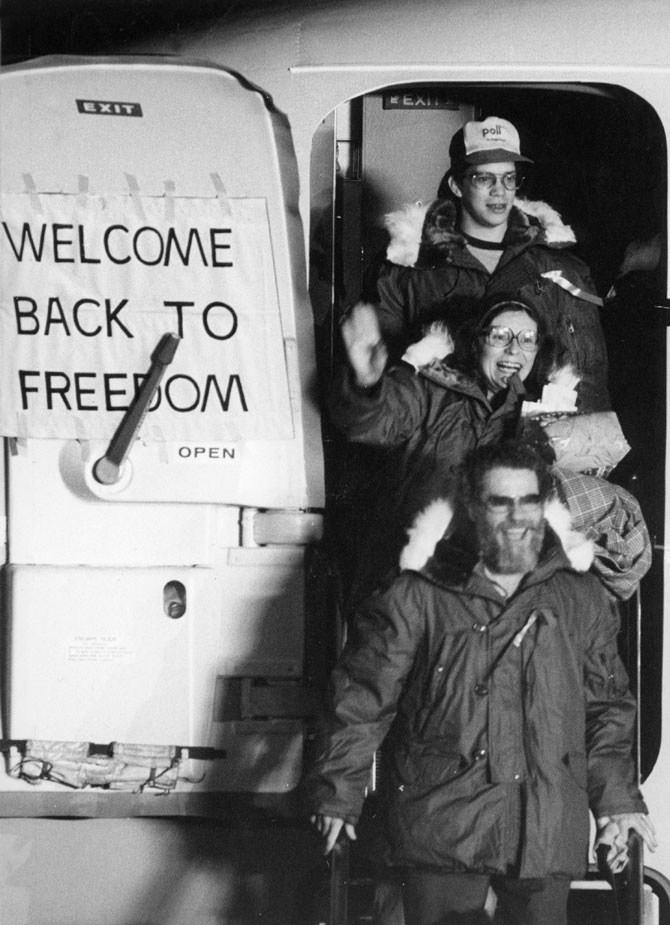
U.S. Hostages Disembark From the Plane After 444 Days of Captivity in Iran

U.S. hostages arrive at Rhein-Main U.S. Air Force base in Frankfurt, Germany, after their release from Iran, on January 21, 1981. They are among 52 Americans held hostage in Iran for 444 days after their capture at the U.S. Embassy in Tehran. The sign on the plane door reads, 'Welcome back to freedom.' With the passage of the Rogers Act establishing the current merit-based, professional Foreign Service, the modern Foreign Service was created on May 24, 1924. On May 22, 2014, U.S. Secretary of State John Kerry delivered remarks at an event celebrating the 90th anniversary of the U.S. Foreign Service.